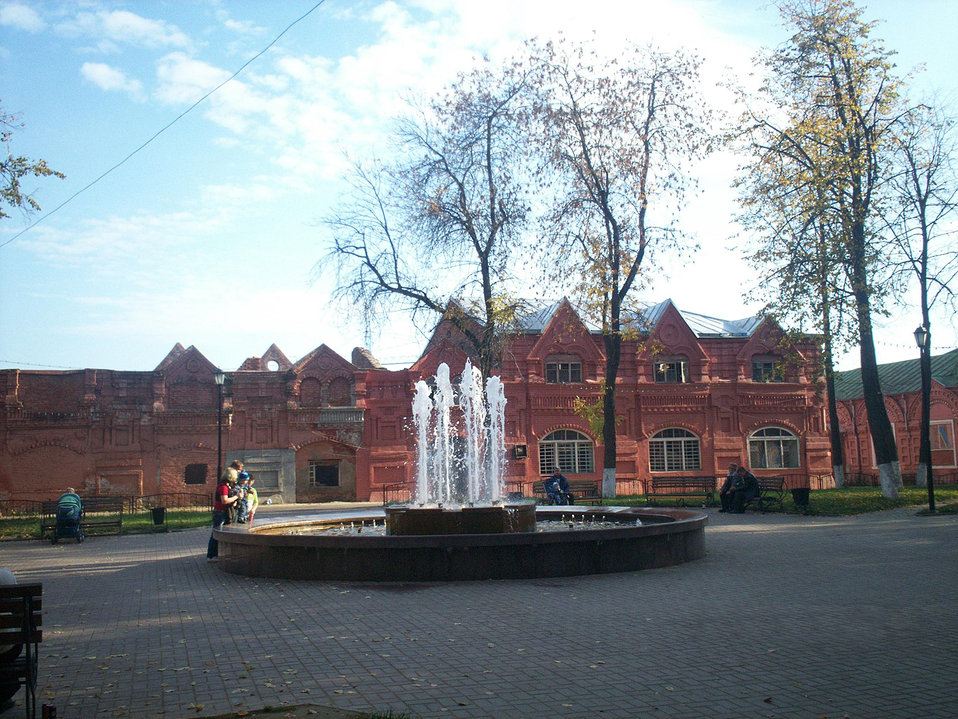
Русский: Фонтан на Советской площади (г. Клин) Dansk: Plads med springvand, fra Sovjettiden Fountain on Sovietskaya square. Klin city, Moscow area